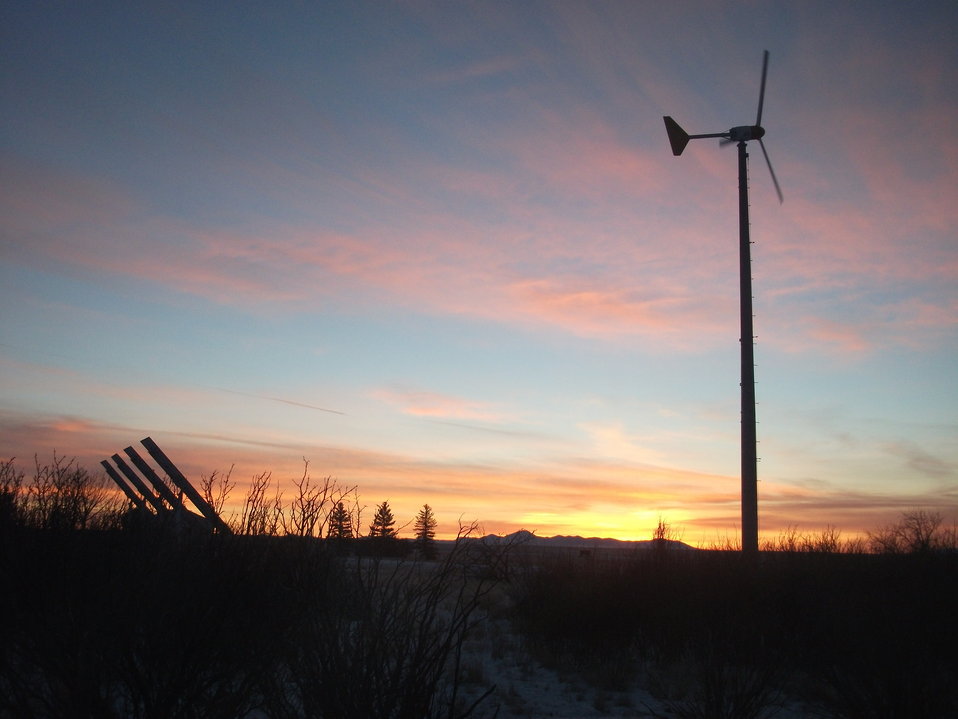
Sunrise On The Refuge

We get some amazing sunrises at the Refuge. You can see why Montana is nicknamed 'Big Sky Country!'